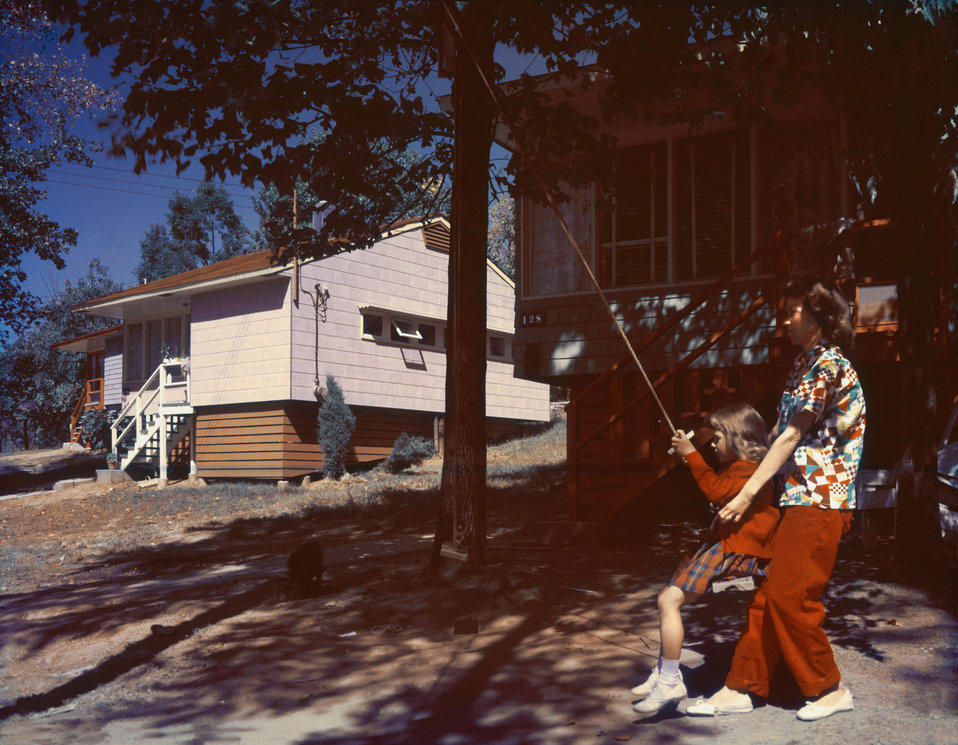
Mother pushing daughter in swing Oak Ridge neighborhood in 1964

1964g DOE Photo by Ed Westcott

Mother pushing daughter in swing with houses in the background Oak Ridge Tennessee 1964